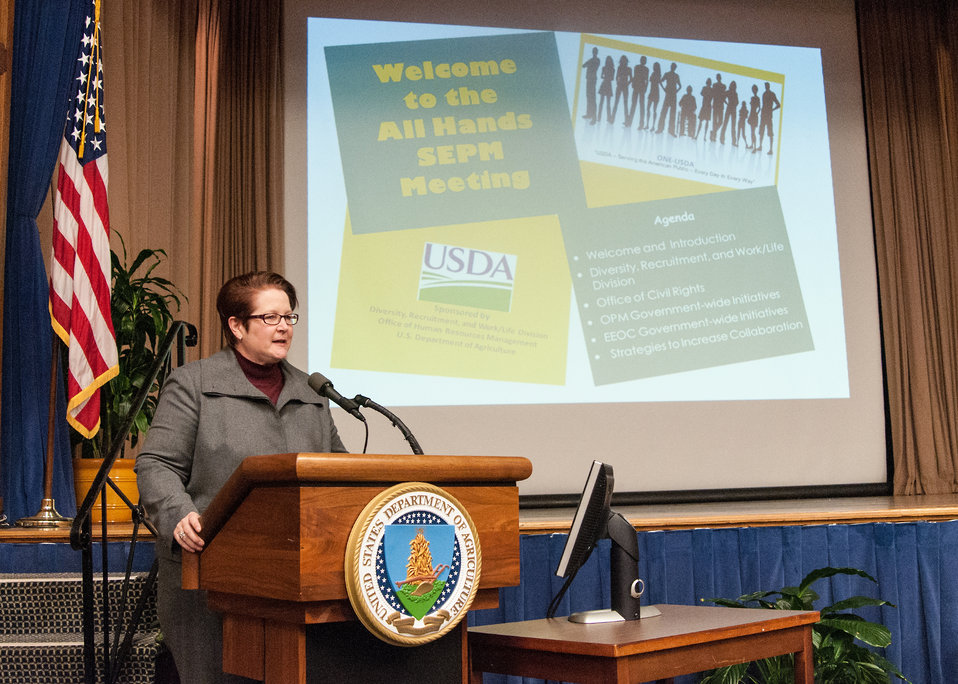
U.S. Department of Agriculture (USDA) Office of Human Resources Management Deputy Director Roberta Jeanquart offers closing remarks at the First Annual All Hands Special Emphasis Program Managers (SEPM) Meeting at the U.S. Department of Agriculture Jefferson Auditorium in Washington, D.C. on Wednesday, Mar. 13, 2013.